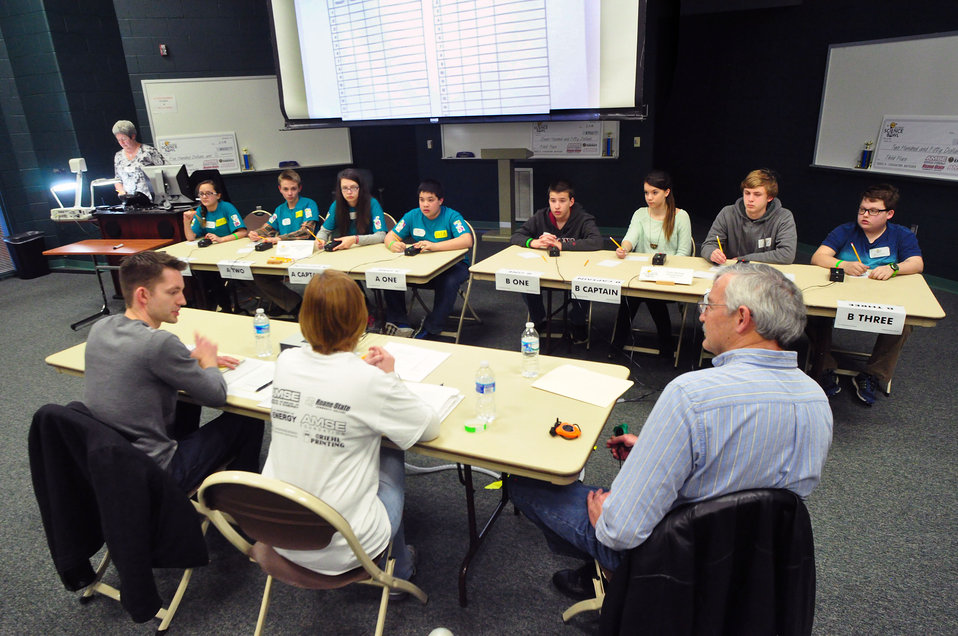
Blount Home Education Association vs Cedar Springs Home School Association DOE Middle School Science Bowl

14-017 DOE photo Lynn Freeny 2-1-2014 Oak Ridge Tennessee